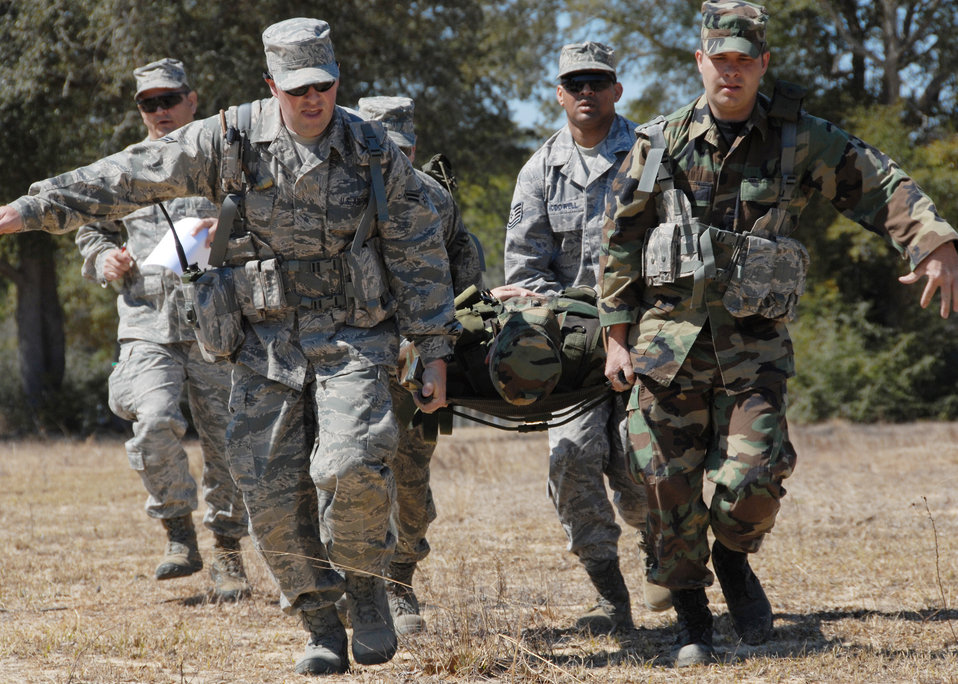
He's not heavy

Airmen with the Air Force Reserve Command's 919th Security Forces Squadron carry an